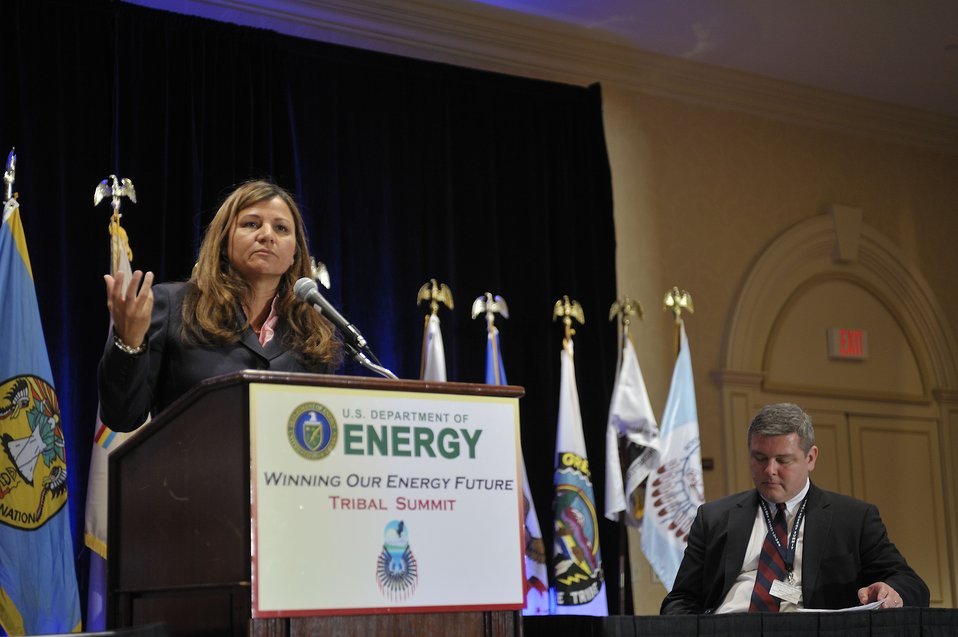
Tribal Energy Summit

Senate Committee on Indian Affairs Majority Staff Director and Chief Counsel, Ms. Loretta Tuell discusses Senator Akaka’s priorities, and DOE Director for Tribal and Intergovernmental Affairs, David Conrad, panel moderator.